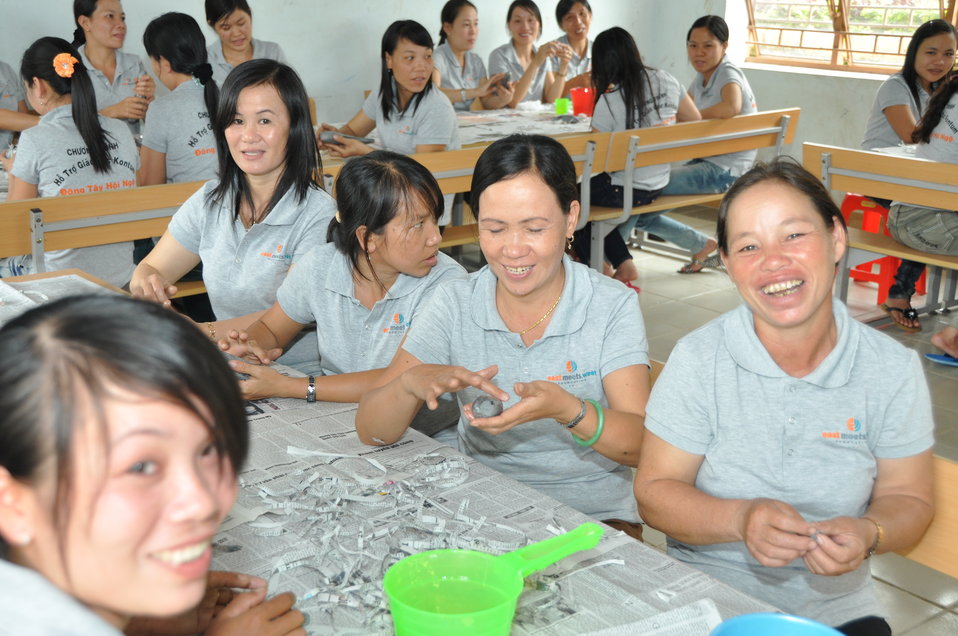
USAID and EMW support teacher training for young ethnic minority children in Kon Tum, Vietnam